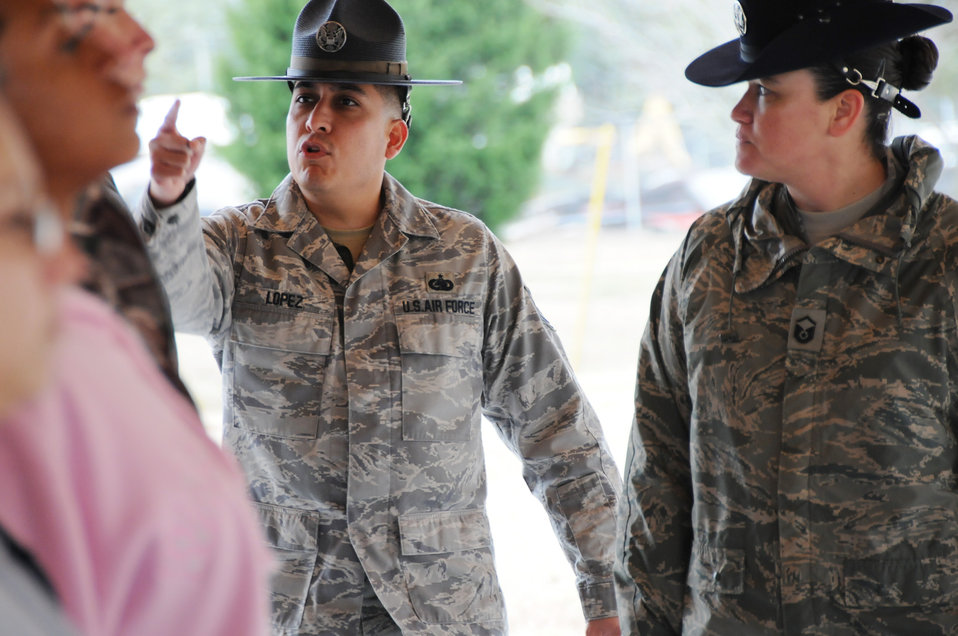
Former BMT instructors give new Reserve recruits glimpse at 'Basic'

Tech. Sgt. Raul Lopez corrects a new Air Force Reserve recruit Feb. 6, 2010, at Duke Field. Sergeant Lopez and his wife, Master. Sgt. Tiffany Lopez (pictured) both former active-duty military training instructors at Lackland Air Force Base, Texas, volunteered their time to help new reserve recruits prepare for basic training during the drill weekend here. The husband and wife team spent four years instructing new trainees at Lackland graduating 25 flights from Basic Military Training. Sergeant Tiffany Lopez is assigned to the 96th Force Support Squadron. Sergeant Raul Lopez is assigned to the 96th Logistics Readiness Squadron.